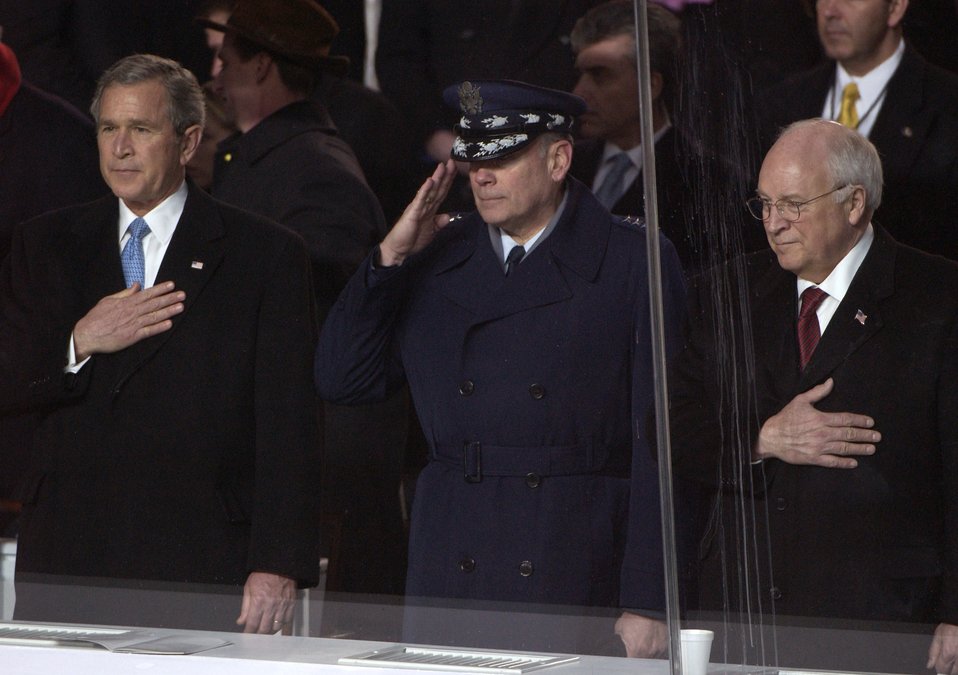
Pass in review

WASHINGTON -- President George W. Bush (from left), Air Force Chief of Staff Gen. John P. Jumper and Vice President Dick Cheney salute as the American flag passes during the 2005 Presidential Inaugural Parade here Jan. 20, 2005.